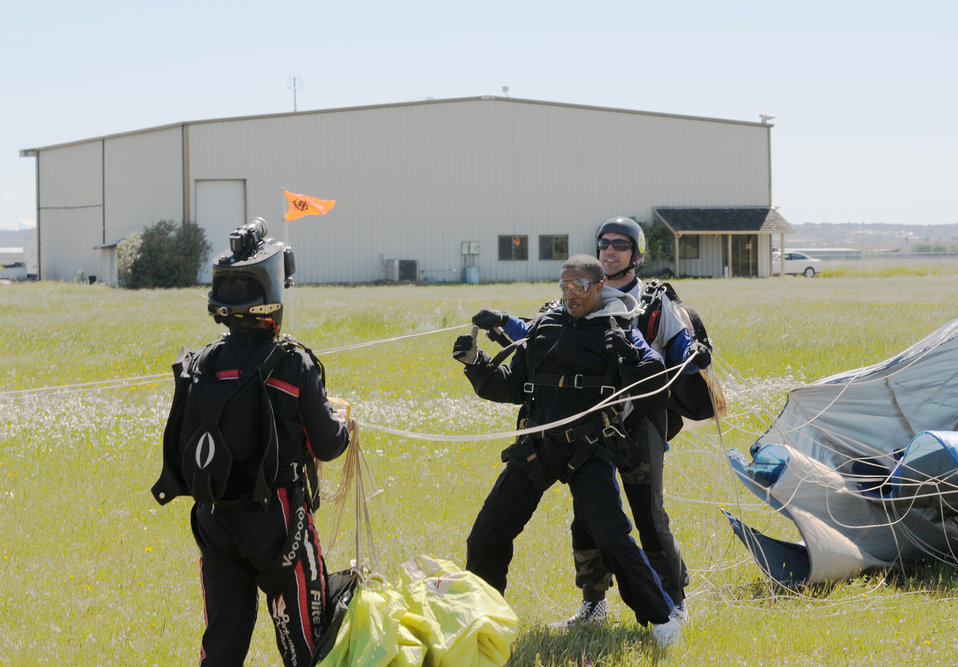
Airmen 'Jump into Prevention'

Airman 1st Class Isaiah Payne gives the thumbs-up to a cameraman after his landing April 30, 2010, at Lincoln Regional Airport, Calif. Airman Payne was sky diving as part of Beale Air Force Base's